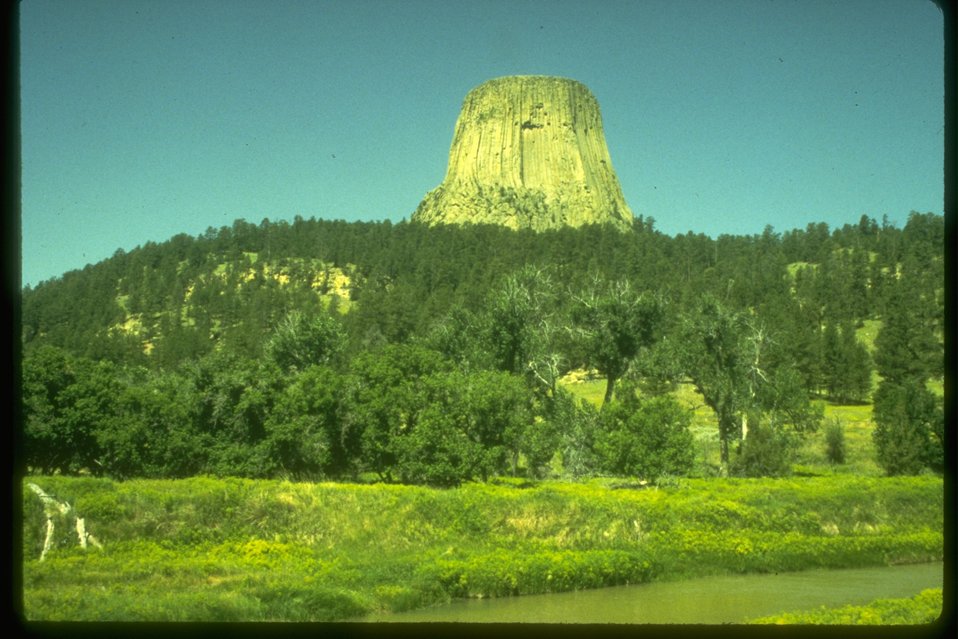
Expanse of leafy spurge in front of Devils Tower National Monument.